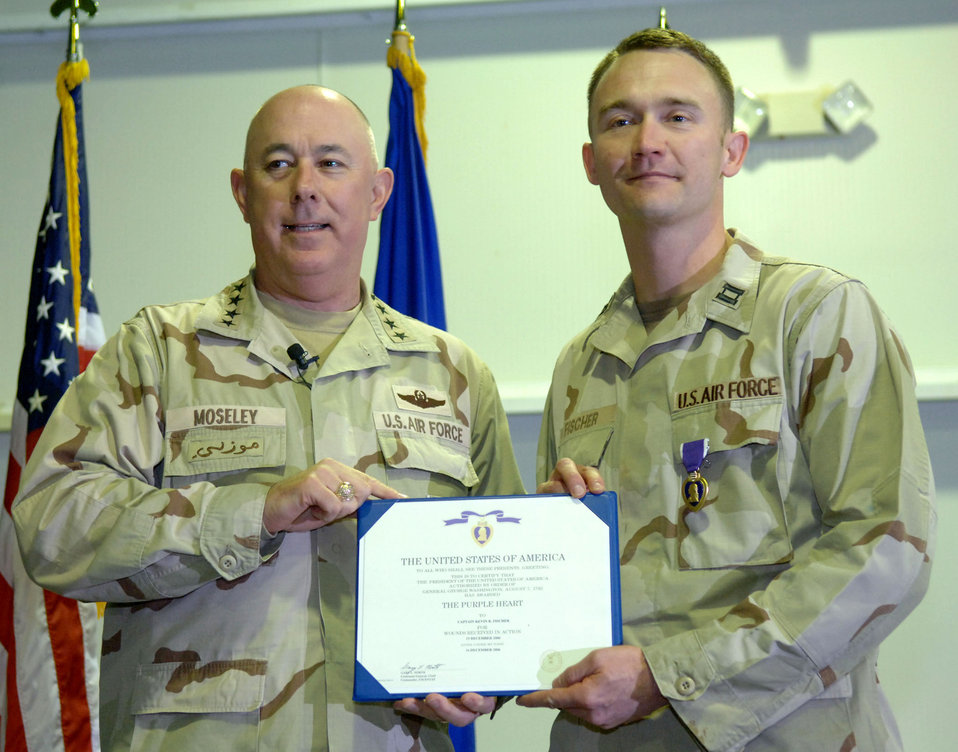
Physician assistant receives Purple Heart

Gen. T. Michael Moseley awards Capt. Kevin Fischer with a Purple Heart Feb. 4 at Balad Air Base, Iraq. General Moseley is the Air Force chief of staff, and Captain Fischer is assigned to the 732nd Expeditionary Logistics Readiness Squadron.